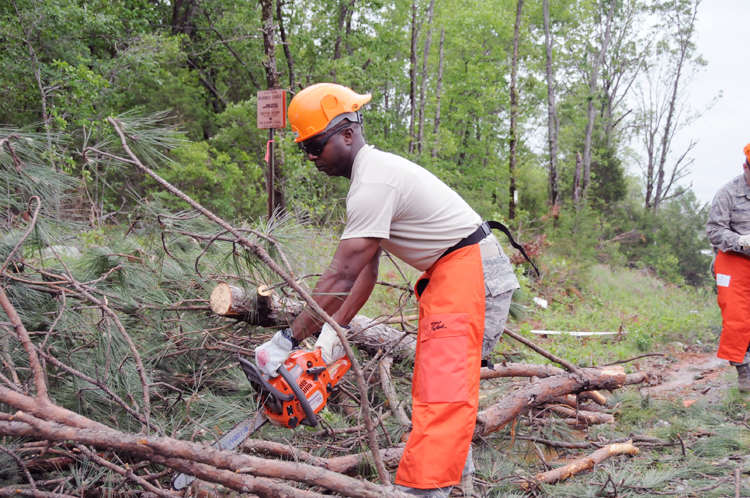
Guardsmen respond to Arkansas tornado damage

Tech. Sgt. Patrick Williams uses a chainsaw to clear fallen trees blocking roadways April 26, 2011, in Vilonia, Ark., after a tornado caused severe damage April 25. Sergeant Williams is an aerial porter technician assigned to the 189th Airlift Wing's Rapid Augmentation Team Charlie.